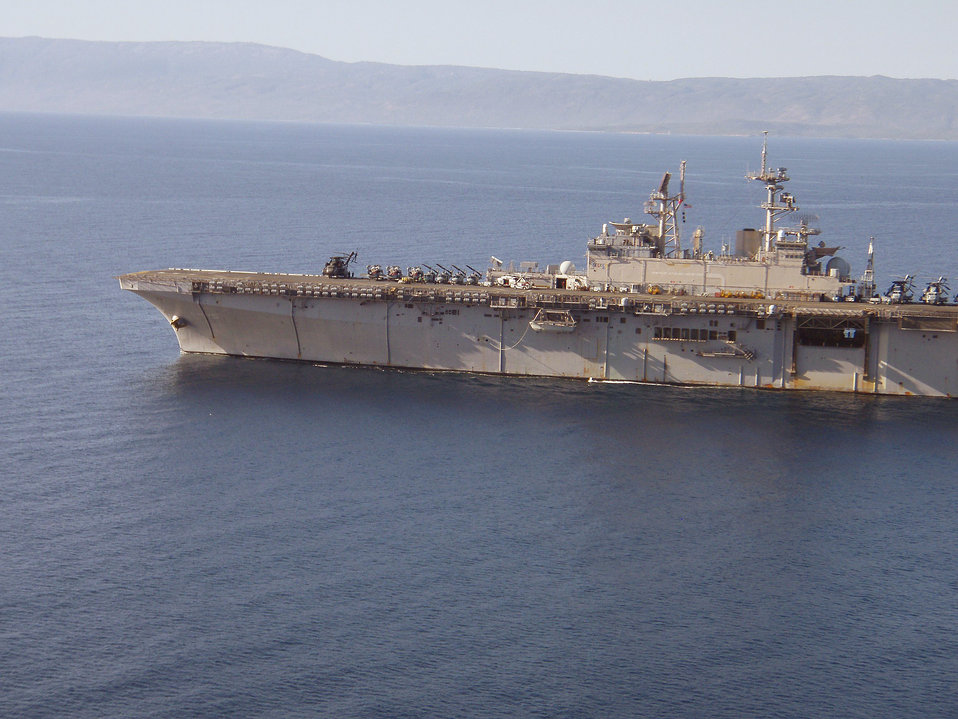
Photographed by U.S. Public Health Service (USPHS) Lt. Cmdr. Gary Brunette this image depicted an aerial view of the aircraft carrier, USS Bataan, during Caribbean Operation Unified Response. This image was captured By Cmdr. Brunette, as he and his fellow USPHS corpsmen were in the process of being transported to the carrier aboard a helicopter from the Nimitz class supercarrier, USS Carl Vinson (CVN-70).